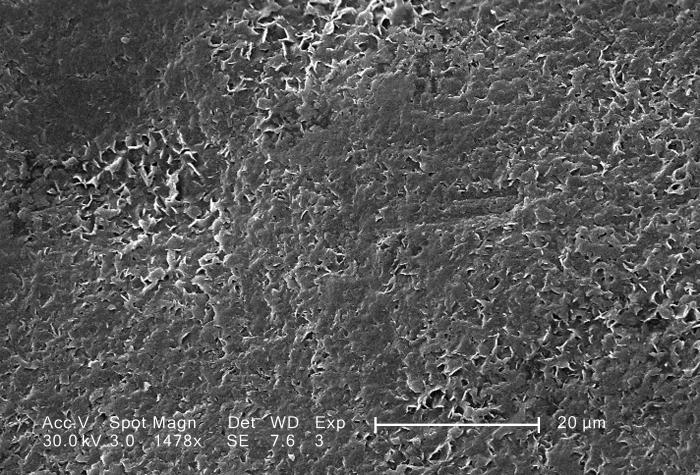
This scanning electron micrograph (SEM) shows the magnified rough surface of a Vitis sp., white table grape; Magnified 2955x. Note that what would appear to be a smooth surface by the unaided eye, is actually a roughened surface, capable of harboring bacteria in its cracks and crannies, and therefore, should be thoroughly washed before consuming these scrumptious fruits.Fresh Facts: